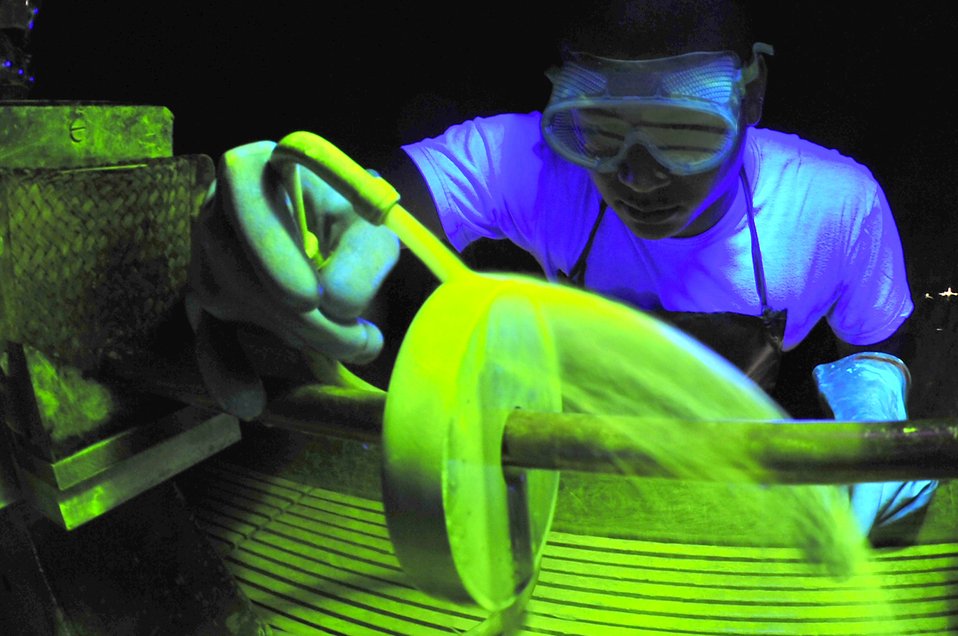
It's good to be green

Airman 1st Class Marvin Moss looks for surface defects under a black light Aug. 26, 2009, at Eielson Air Force Base, Alaska. The black light causes particles which are unseen to the human eye to become fluorescent. Airman Moss is a non-destructive inspection journeyman assigned to the 354th Maintenance Squadron.